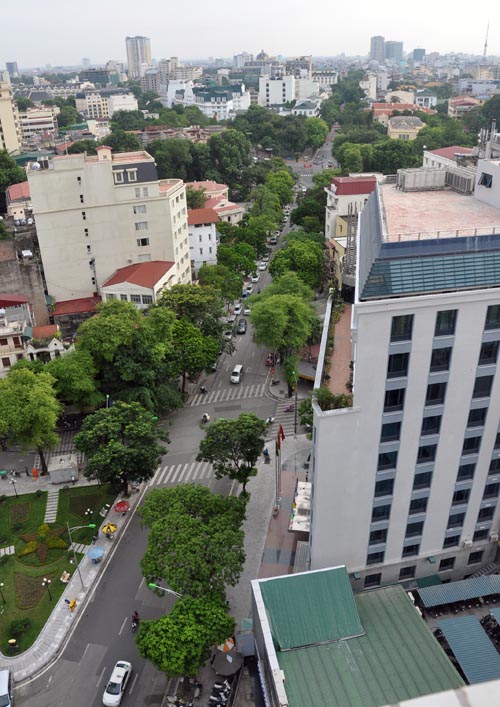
Hanoi Skyline